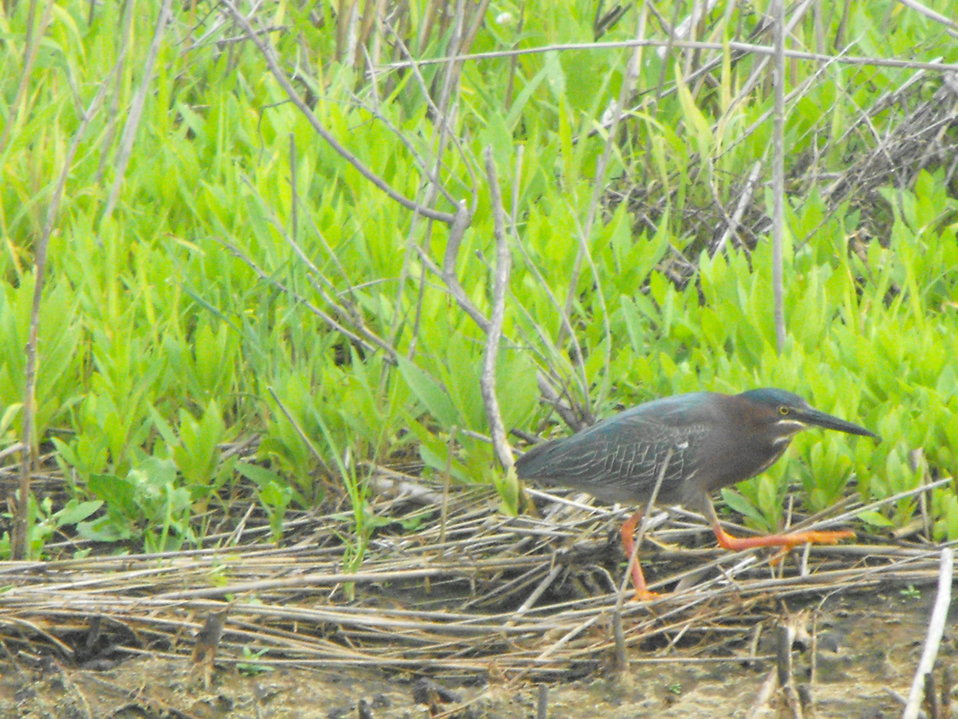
Green Heron

A green heron on the Wildlife Loop at Chincoteague National Wildlife Refuge / Assateague Island National Seashore.